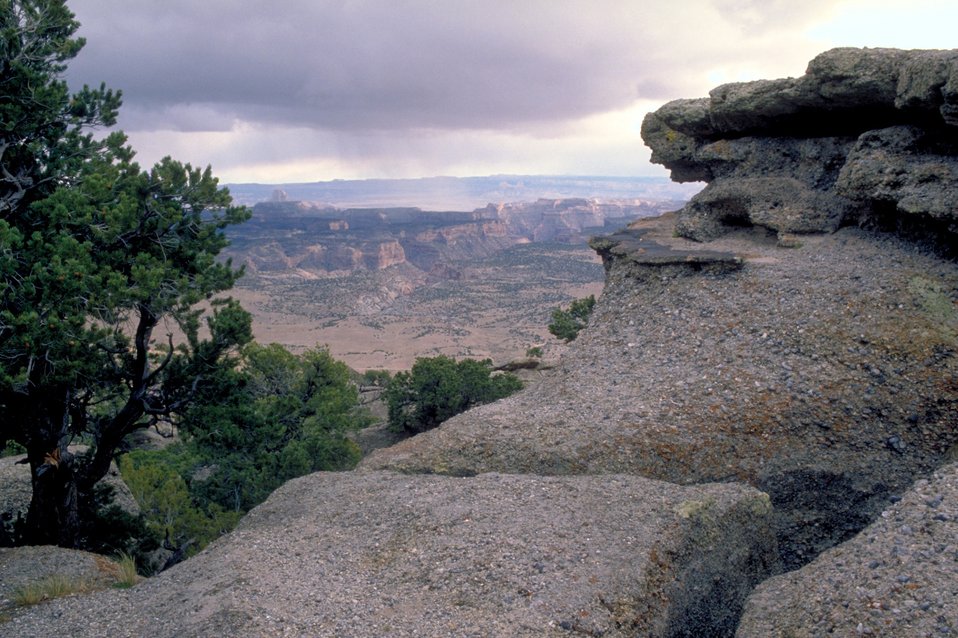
San Rafael Swell from Cedar Mountain.